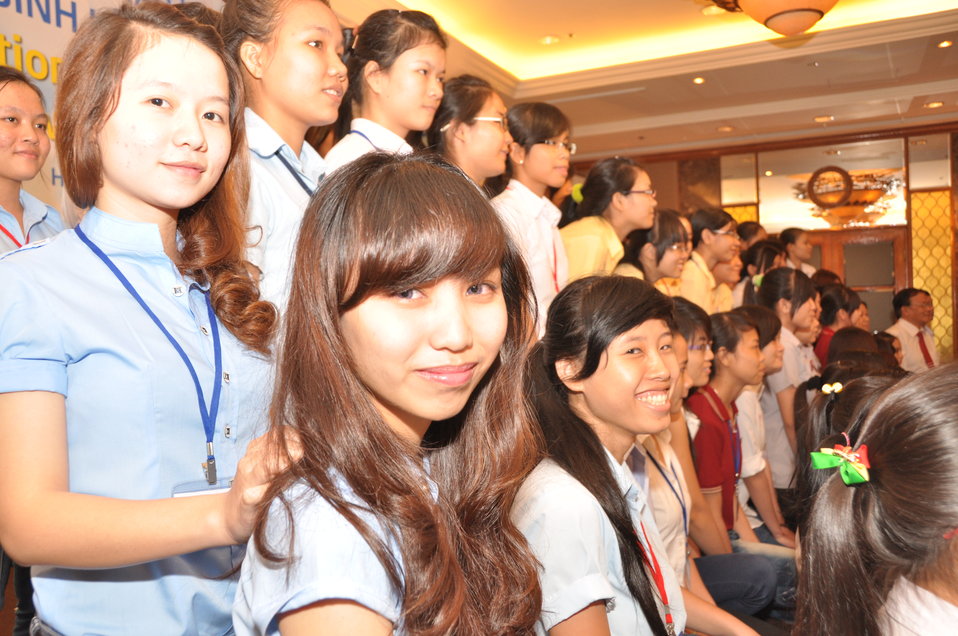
Female Vocational Student Scholarship Ceremony

January 11, 2013, Ho Chi Minh City